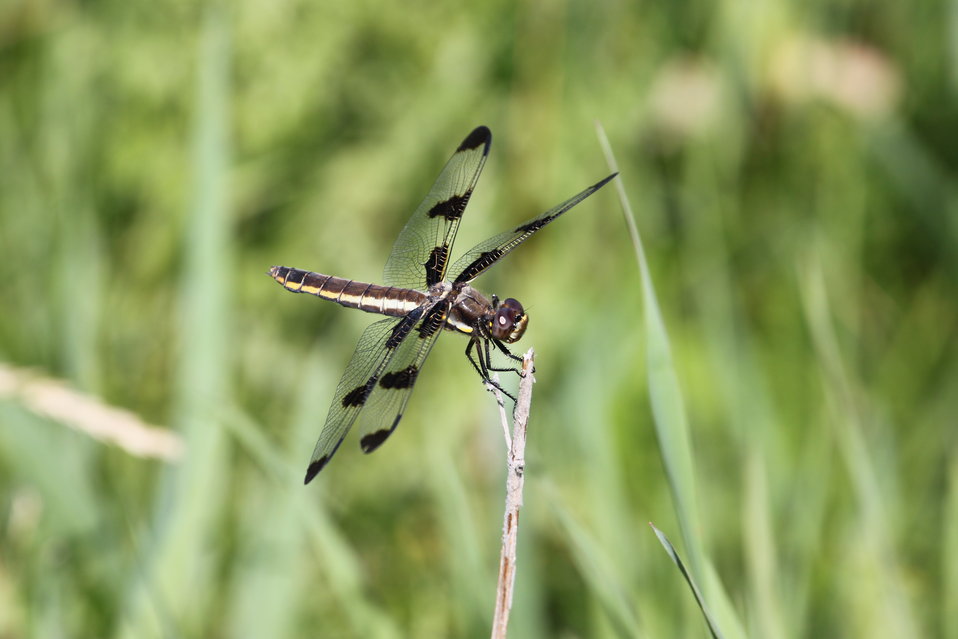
Twelve-spotted Skimmer

Libellula pulchella found commonly at wetland margins on the Refuge.